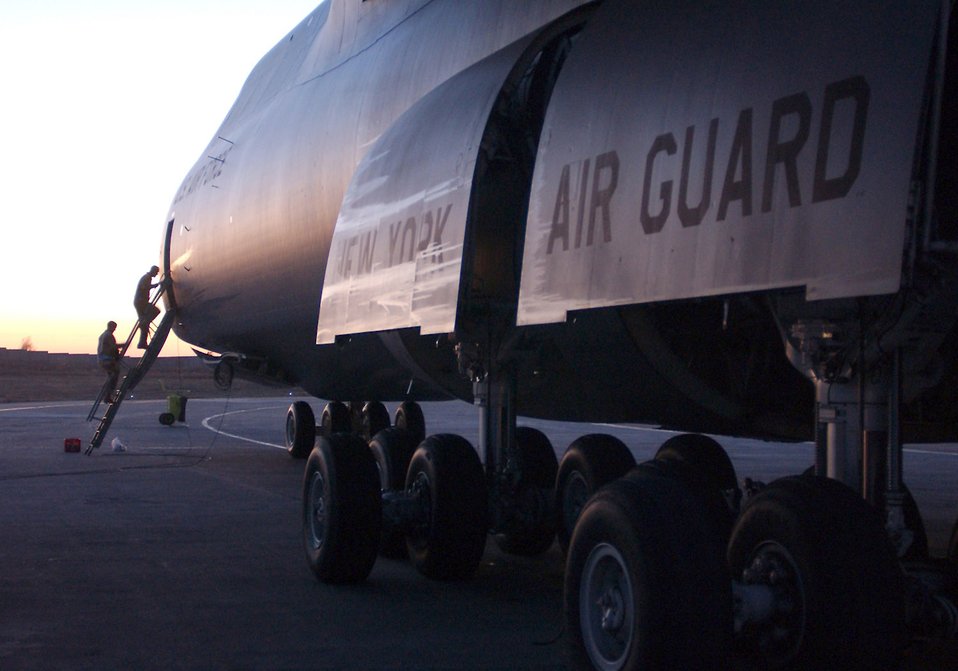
Galaxy of aid

MANAS AIR BASE, Kyrgyzstan -- Airmen board a C-5 Galaxy at sunset here. The giant transport, from the 105th Airlift Wing of the New York Air National Guard arrived here Oct. 21 full of cargo to support Operation Enduring Freedom and relief efforts in Pakistan.